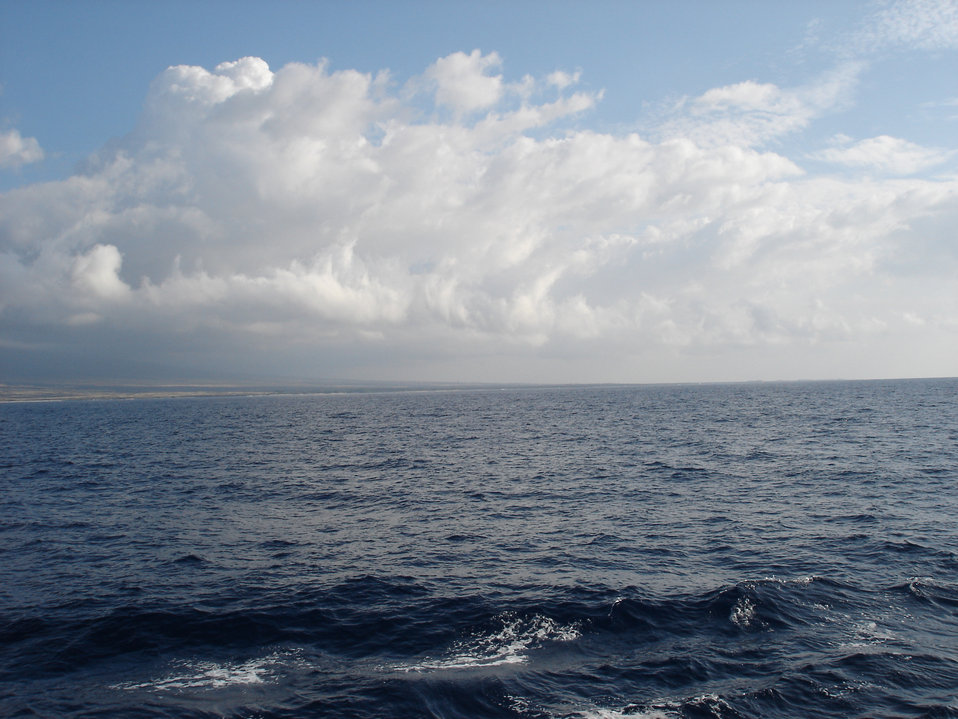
Beautiful cumulus clouds offshore of a Hawaiian island.